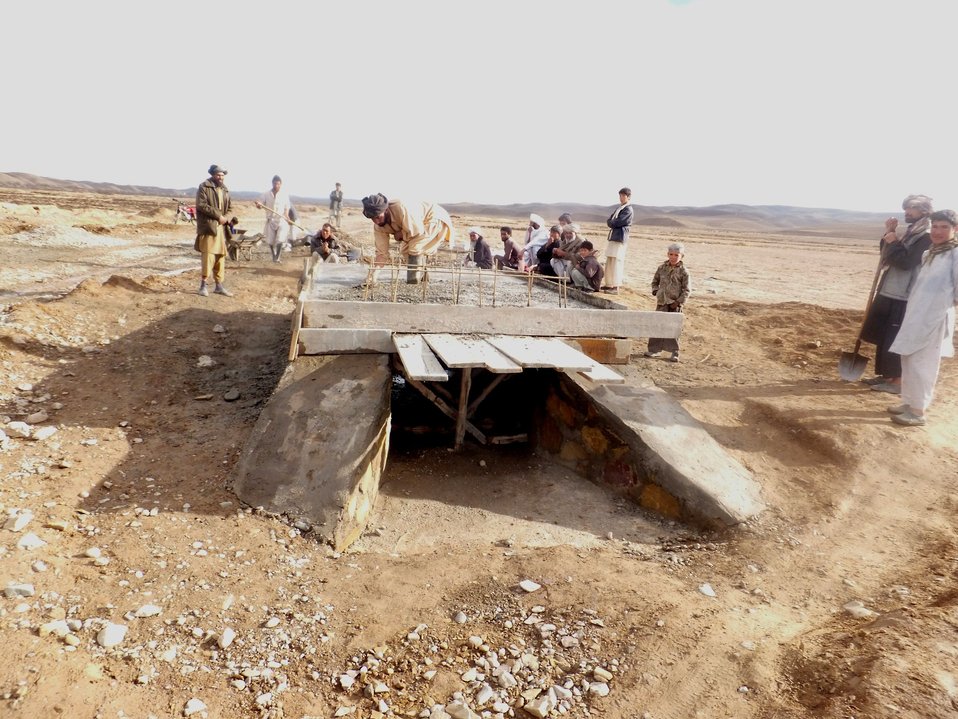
Laborers working to construct a culvert in Neyazai-ha village in Muqur D...